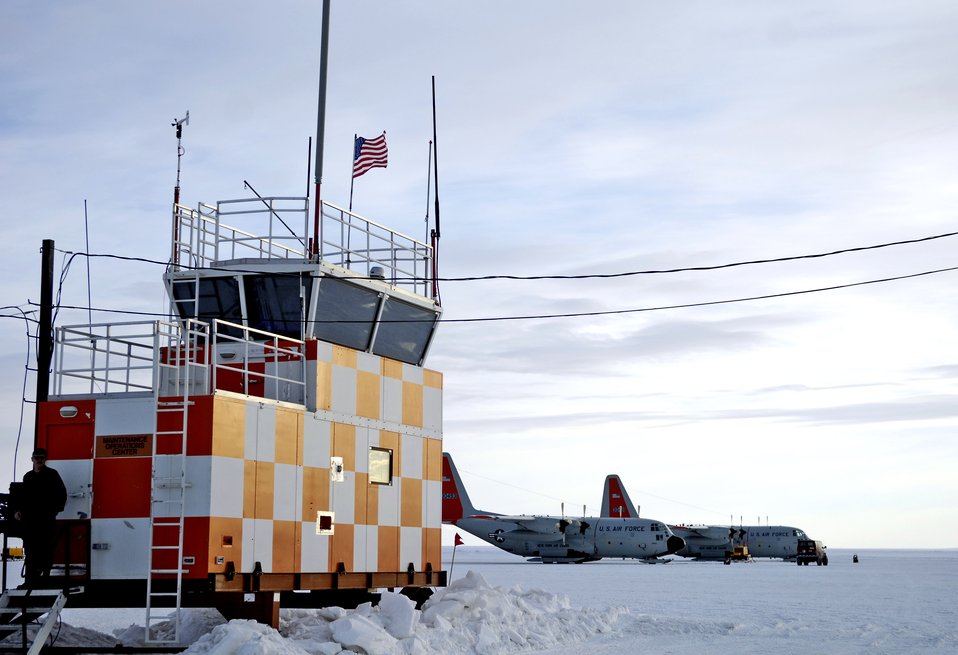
Operation Deep Freeze main season underway

Two LC-130 Hercules sit in front of a control tower on the ice runway near McMurdo Station, Antarctica, Nov. 27 in preperation for use in Operation Deep Freeze. Active duty, Guard and Reserve Airmen from McChord Air Force Base, Wash., and the New York Air National Guard's 109th Airlift Wing, combined efforts to support the 13th Air Force-led Joint Task Force Support Forces Antarctica operation.